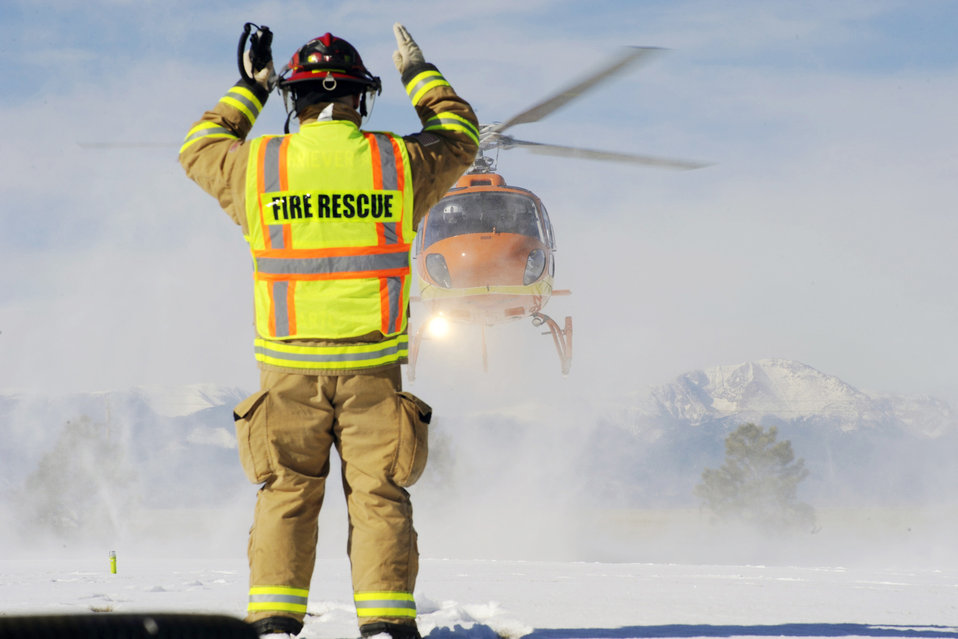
Schriever trains for emergencies

A base fireman guides a Flight for Life helicopter during an emergency services exercise Feb. 10, 2010, at Schriever Air Force Base, Colo. The helicopter and crew added to the realism of the exercise scenario.